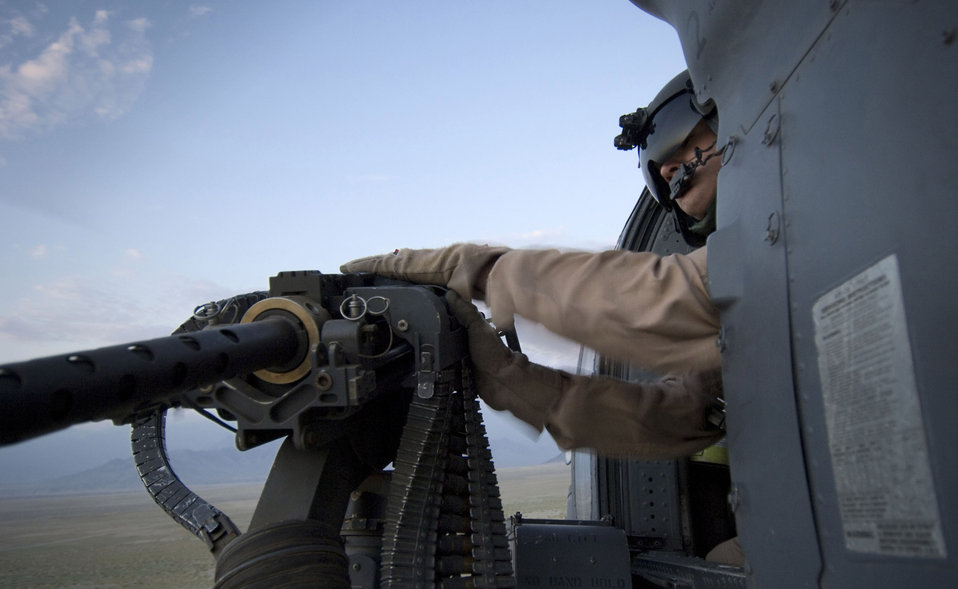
Flying with the Pave Hawks

Senior Airman Ryan Ballinger, a 33rd Expeditionary Rescue Squadron gunner at Bagram Air Base, Afghanistan, checks out the 50-caliber machinegun on an HH-60G Pave Hawk Aug. 2 during a training flight. As an aerial gunner, Airman Ballinger provides security for combat search and rescue missions. He is deployed from the 33rd Rescue Squadron at Kadena AB, Japan.